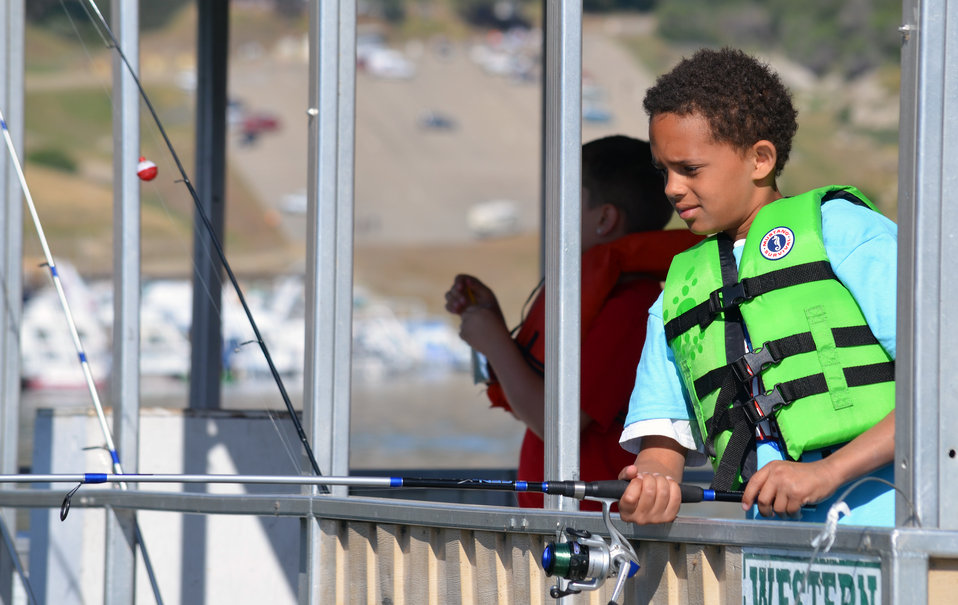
Take a Warrior Fishing 2014 at Pine Flat Lake

Look out bass! Pine Flat Lake, the U.S. Army Corps of Engineers Sacramento District park near Piedra, Calif., hosted Take a Warrior Fishing on May 3, 2014. The recreational event sponsored by Central Valley Veterans and their corporate donors, plus bright sunshine and good fishing, attracted 68 veterans and their families. A team of over 100 volunteers made sure veterans and their families enjoyed a day of fishing, fun and food